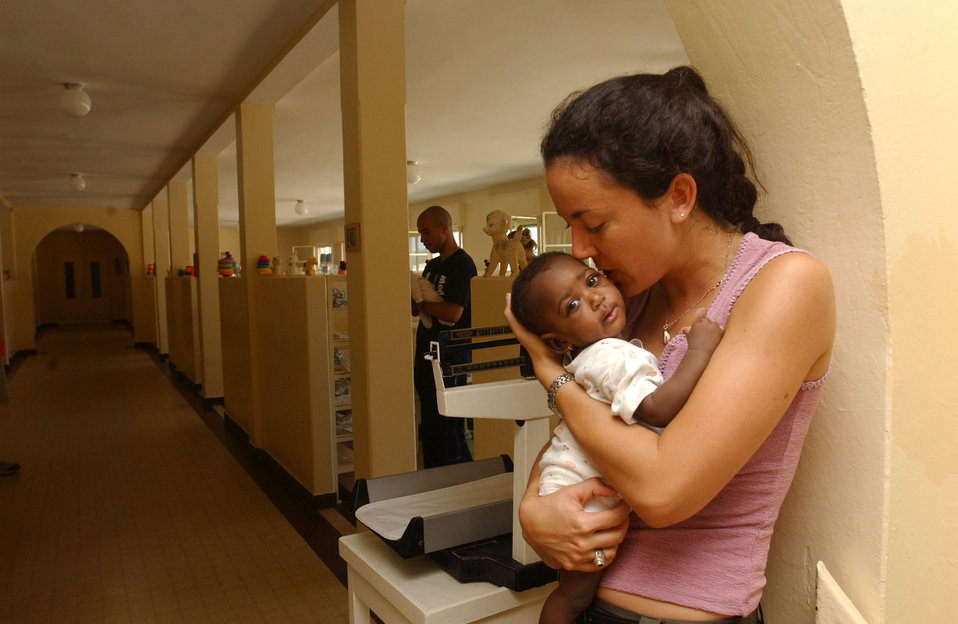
Pretty babies

DAKAR, Senegal -- Capt. Heather Healy gives kisses to a baby at the Pouponniere de Medina orphanage here. The 398th Air Expeditionary Group donated clothes, toys and miscellaneous supplies to the orphanage Oct. 2. Healy is deployed from Royal Air Force Mildenhall, England.